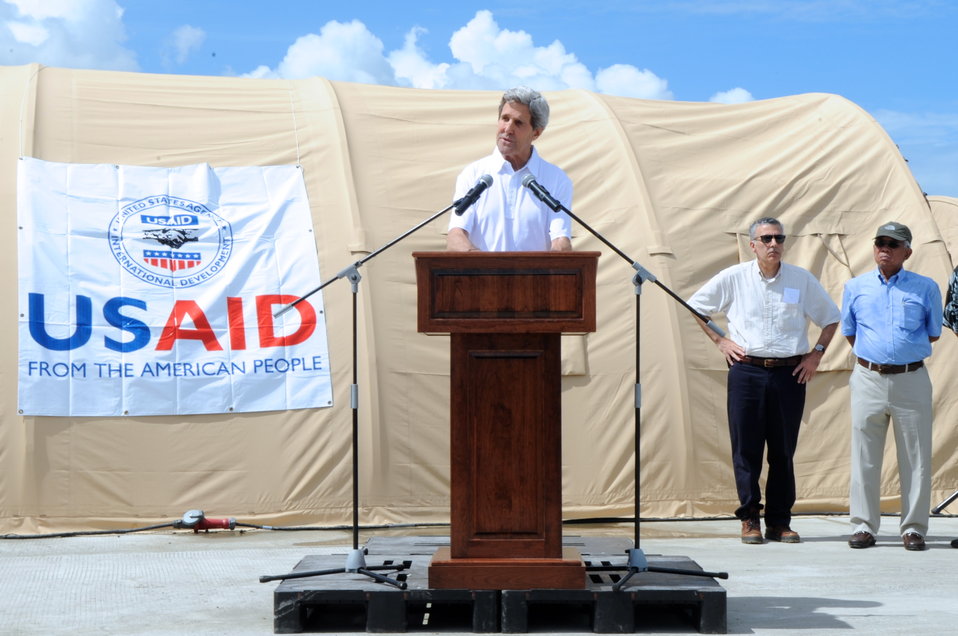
Secretary Kerry Announces $25 Million in Fresh U.S. Recovery Aid for Typhoon Haiyan Victims

U.S. Secretary of State John Kerry, flanked by U.S. and Filipino government officials, announces $25 million in fresh U.S. recovery aid for the victims of Typhoon Haiyan as he visited Tacloban City, Philippines, on December 18, 2013.